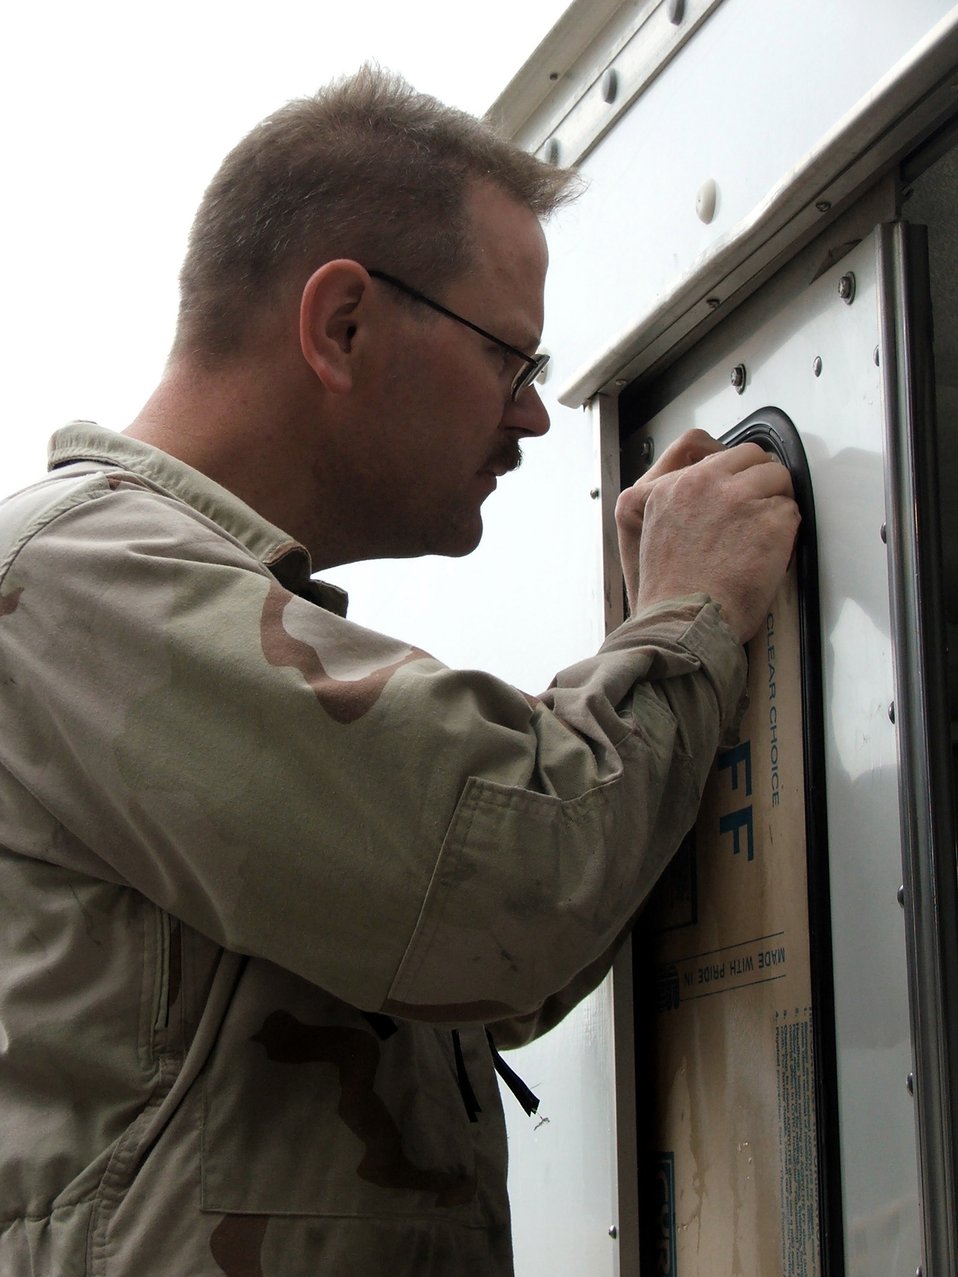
Deployed vehicle maintainers keep wheels turning

KARSHI-KHANABAD AIR BASE, Uzbekistan -- Tech. Sgt. Scott Rauscher replaces a window in a maintenance van here May 7. He is a mechanic with the 416th Expeditionary Mission Support Squadron's vehicle maintenance flight and is deployed from Fairchild Air Force Base, Wash.